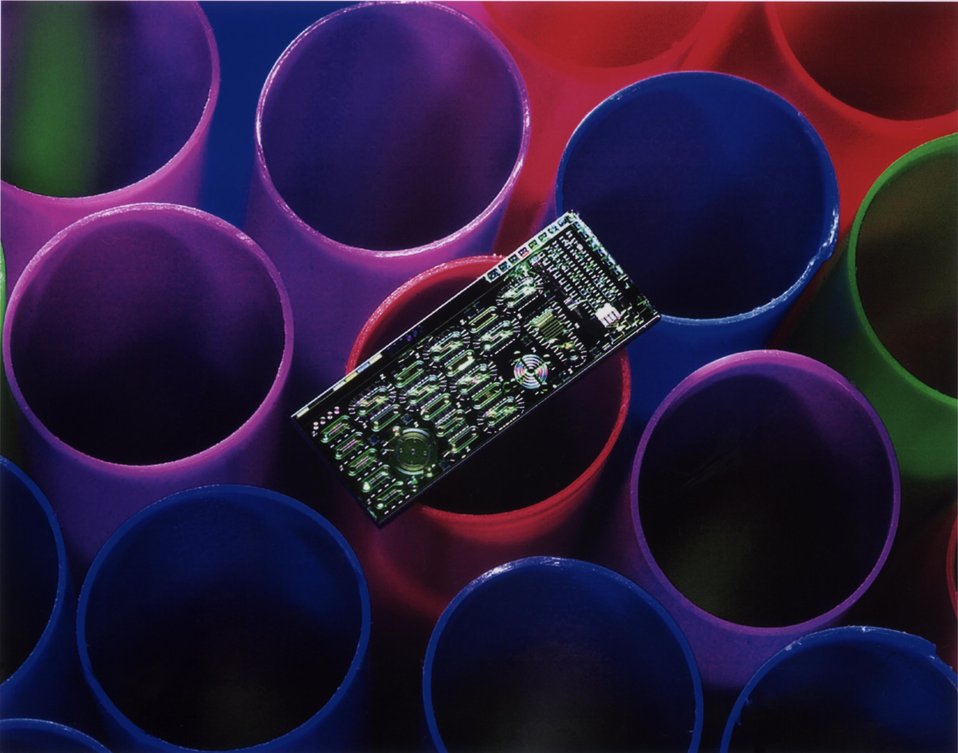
A MODULE WITH EIGHT MICRO-DEVICES RESTING ON TOP OF A SODA STRAW.

THE IMAGE SHOWS THAT EIGHT MICRO-DEVICES, COMPLETE WITH MICROFLUIDIC CHANNELS AND DRIVE MOTORS FIT ON A MODULE RESTING ON THE END OF A SODA STRAW. A MICROFLUIDIC DEVICE TYPICALLY CONSISTS OF THOUSANDS OF CHANNELS CONDUCTING TINY AMOUNTS OF FLUIDS FOR ANALYSIS.